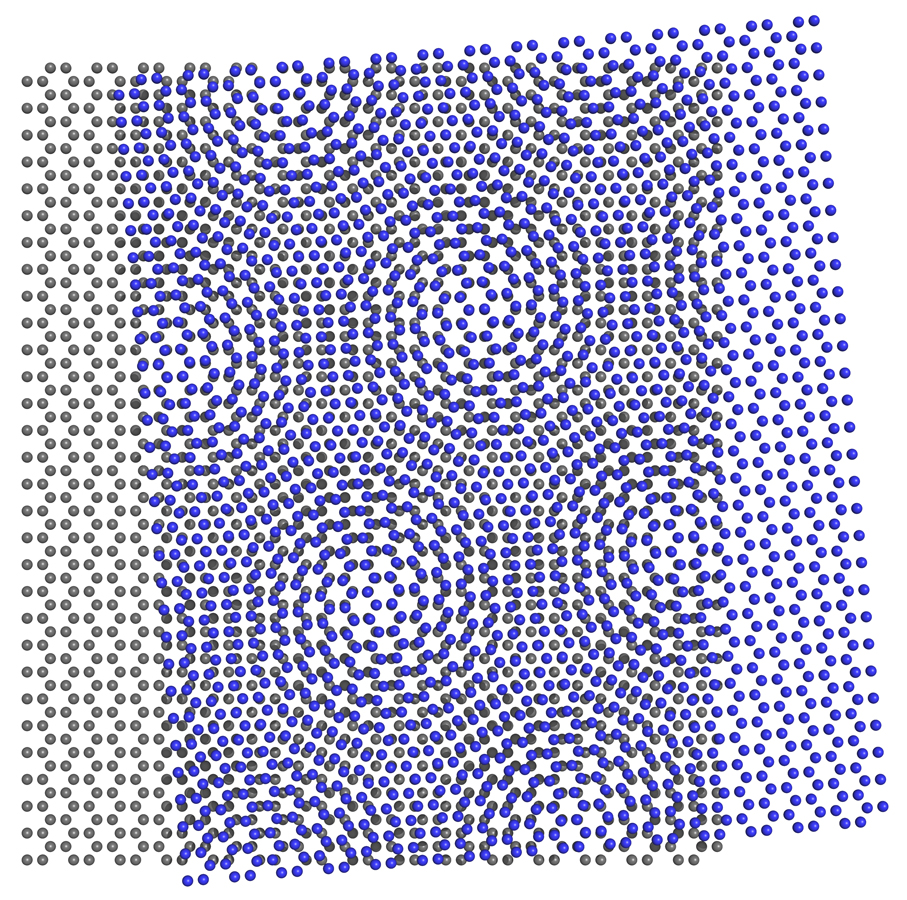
Atomic scale moire patterns

Moiré patterns appear when two or more periodic grids are overlaid slightly askew, which creates a new larger periodic pattern. Researchers from NIST and Georgia Tech imaged and interpreted the moiré patterns created by overlaid sheets of graphene to determine how the lattices of the individual sheets were stacked in relation to one another and to find subtle strains in the regions of bulges or wrinkles in the sheets.